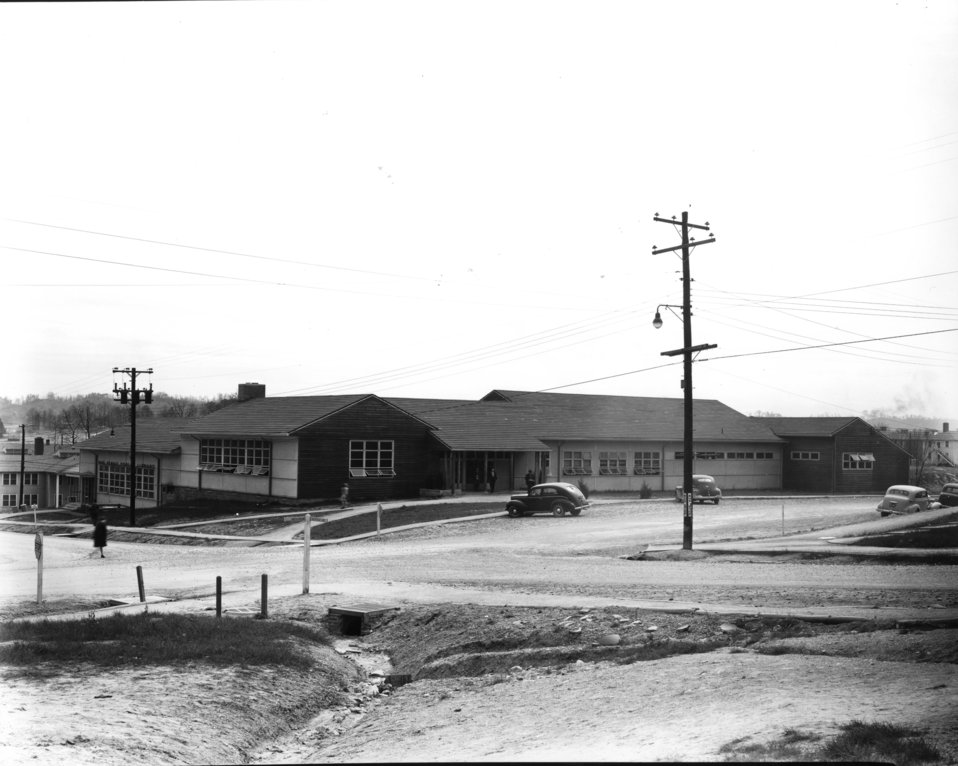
Services at Oak Ridge